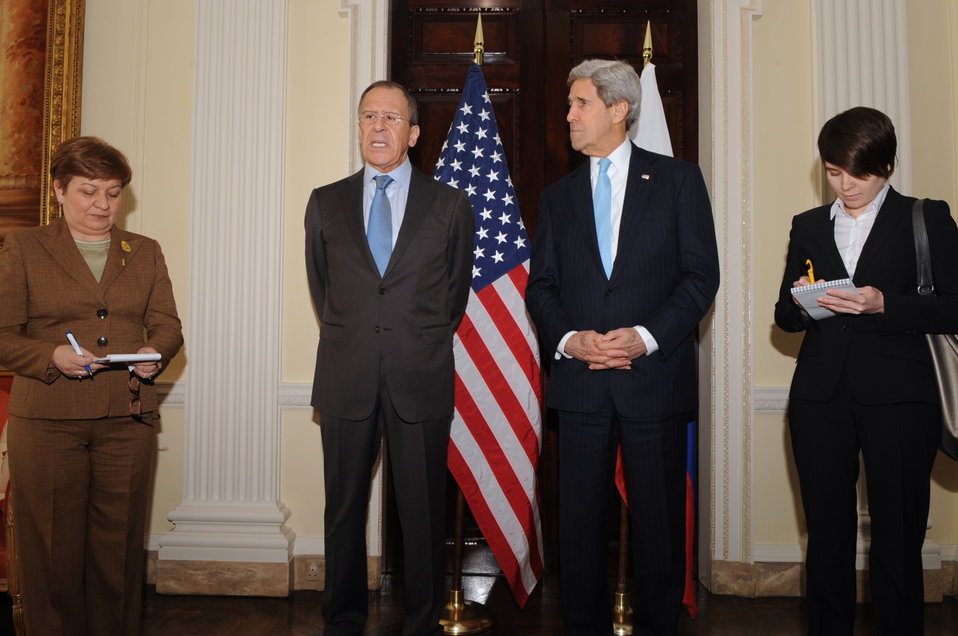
Russian Foreign Minister Lavrov Addresses Reporters Before Meeting With Secretary Kerry in London

Flanked by a pair of translators, Russian Foreign Minister Sergey Lavrov addresses reporters before a meeting with U.S. Secretary of State John Kerry at Winfield House, the U.S. Ambassador's Residence in London, United Kingdom, on March 14, 2014.